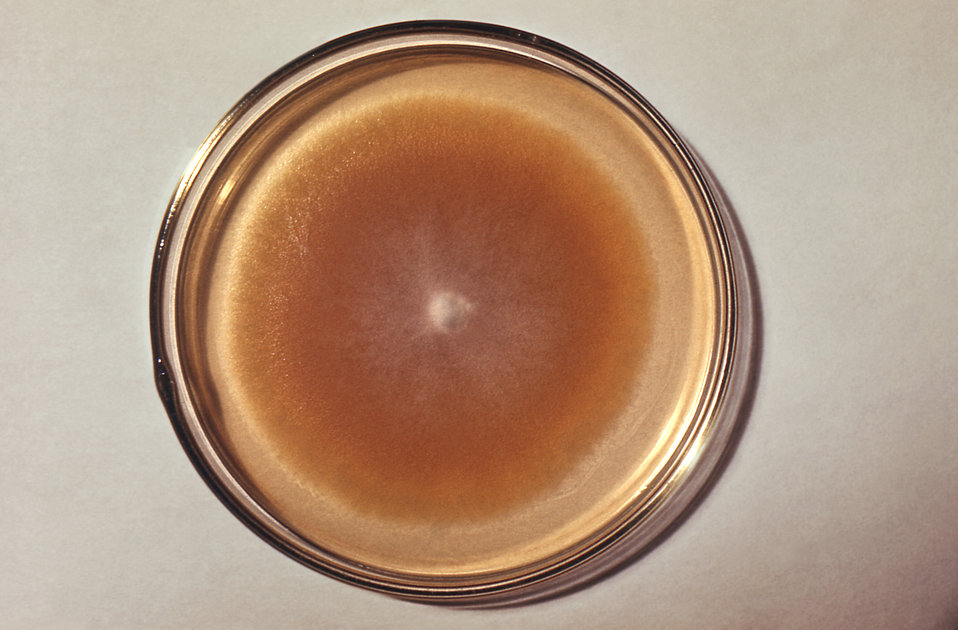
This is a front view of a Petri dish culture plate that had cultivated a large Trichophyton mentagrophytes var. nodulare fungal colony. The colony displayed a morphology consisting of a red-orange coloration, and a fuzzy, cottony central region. T. mentagrophytes colonial coloration ranges from white to bright yellowish-beige, to red-violet.